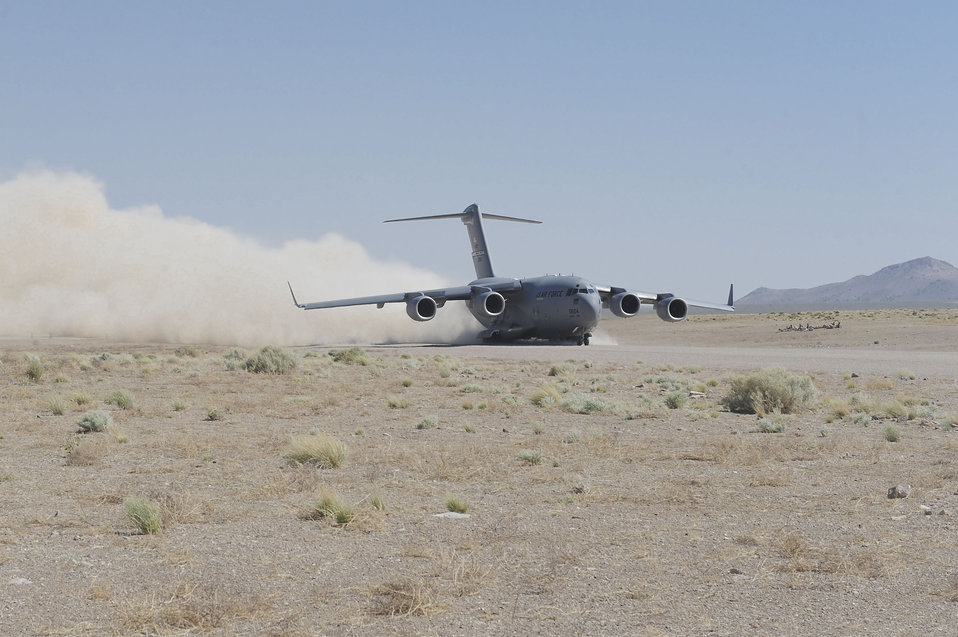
Airmen, Soldiers complete MAFEX

A C-17 Globemaster III taxies in at the Nevada Test and Training Range in Tonopah, Nev., May 23, 2012. Service members participating in Mobility Forces Exercise 12A practiced forced-entry operations.